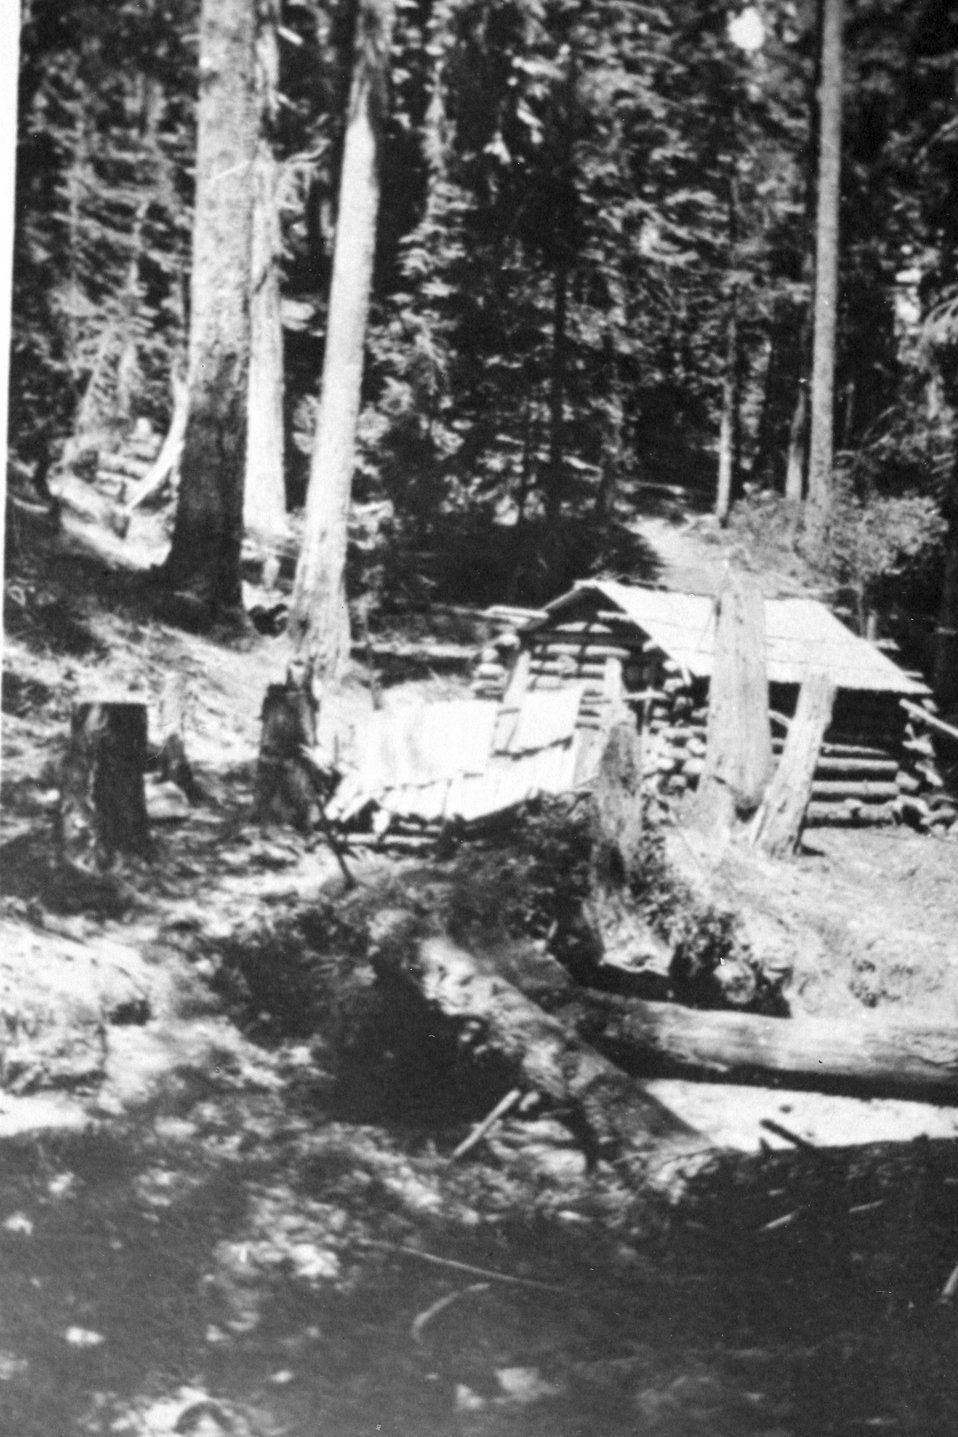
Cabin in Homestead Canyon.